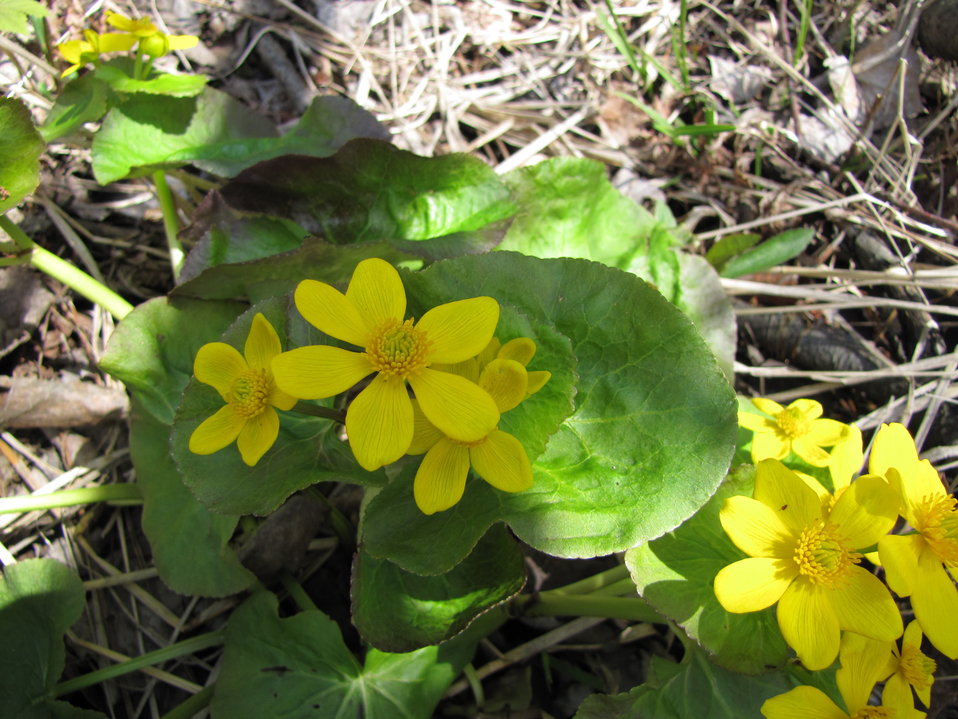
Marsh Marigold is a wetland plant and can be found at Seney National Wildlife Refuge.